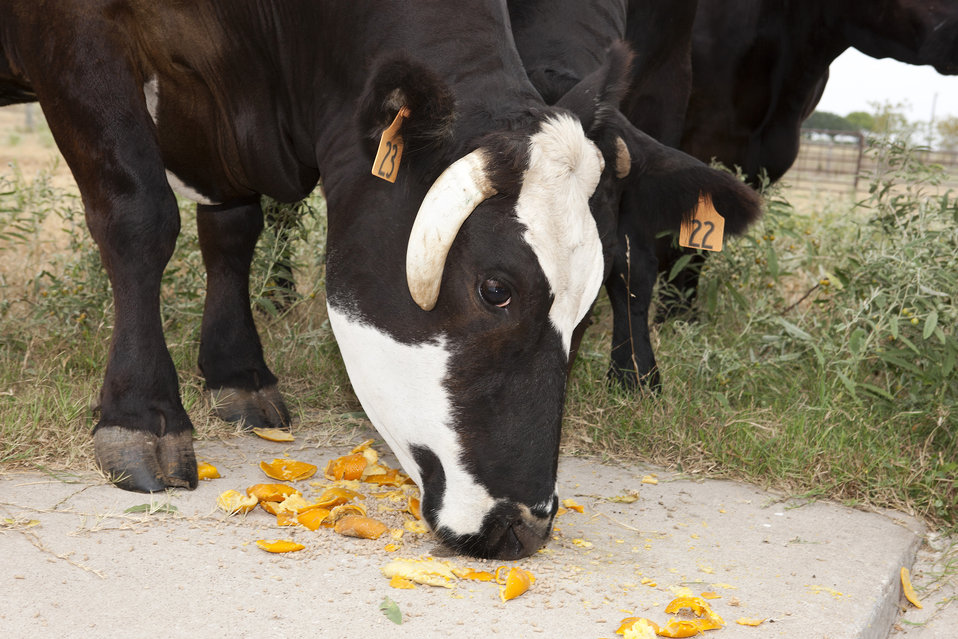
Cows enjoy eating orange peel and pulp on Dec. 6, 200, but these citrus byproducts are more than just tasty and nutritious, they also have an antimicrobial effect in the cow’s gut.